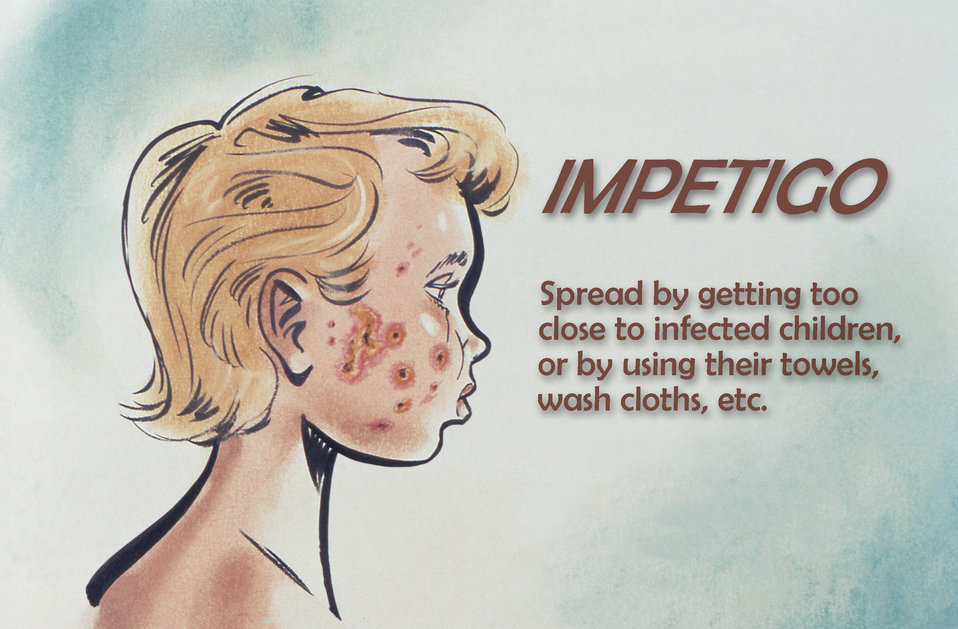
This illustration depicts a right lateral, or side view of a child's head and neck. You'll note the lesions on the temple and cheek regions due to the inflammatory skin disease known as impetigo, usually caused by Staphylococcus aureus bacteria, and sometimes Group A Streptococcus sp. bacteria as well.